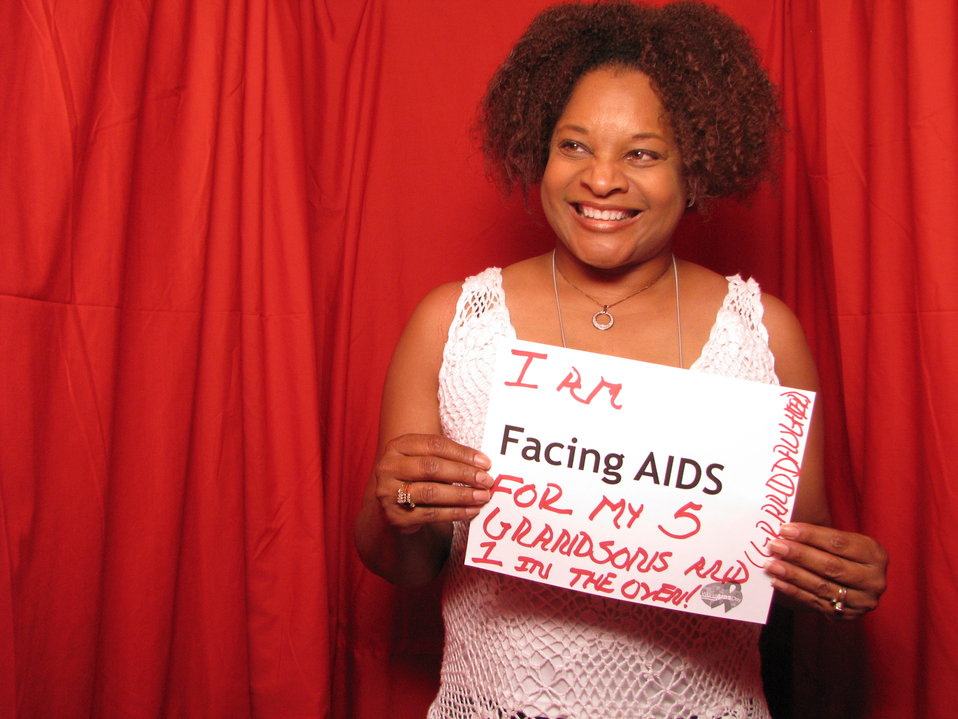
I am FACING AIDS for my 5 grandsons and 1 in the oven!

From the AIDS.gov photo booth at the U.S. Conference on AIDS, September 2010 (Orlando, FL).